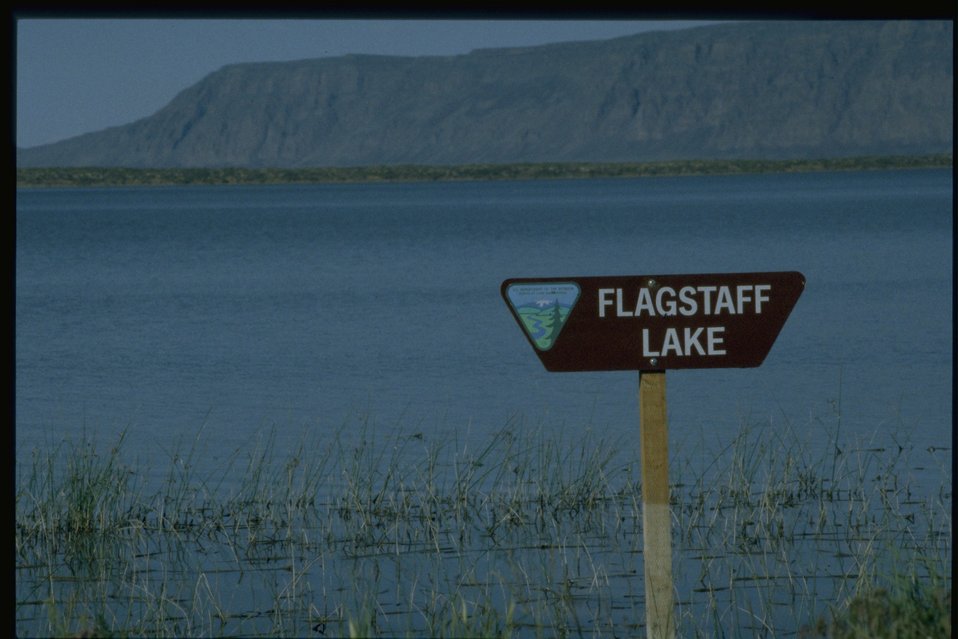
Flagstaff Lake.